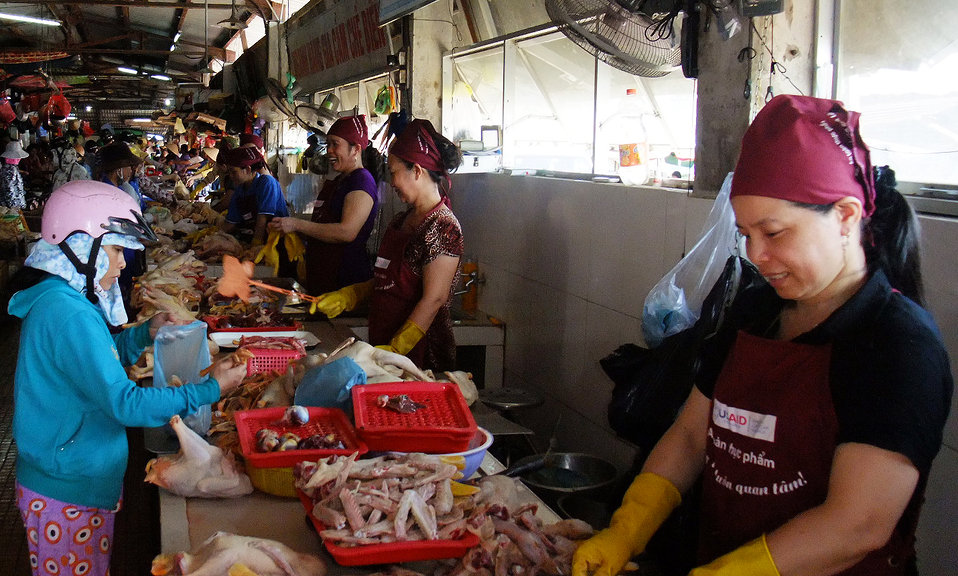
USAID Mission Director Francis Donovan visits Dong Ha Poultry Market